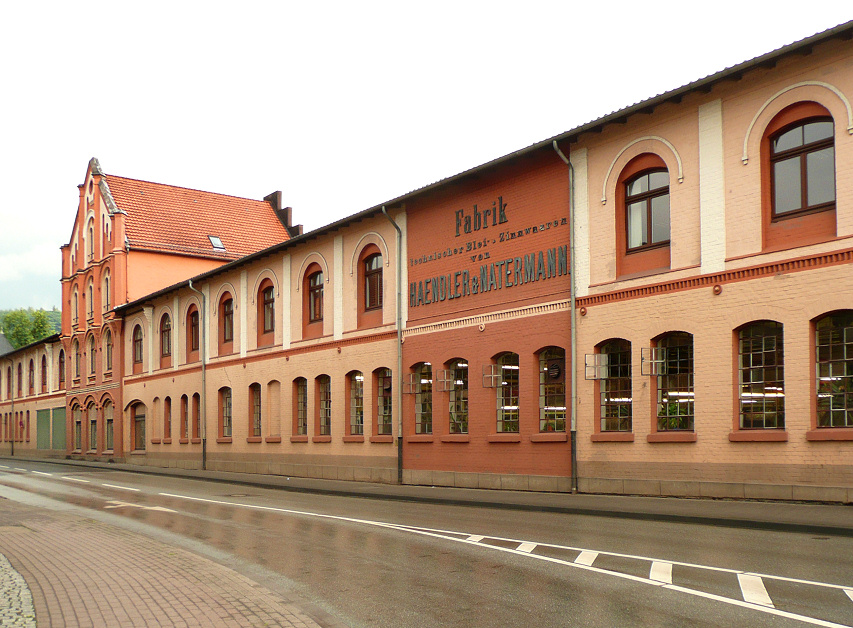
Deutsch: Haendler & Natermann Hann. Münden